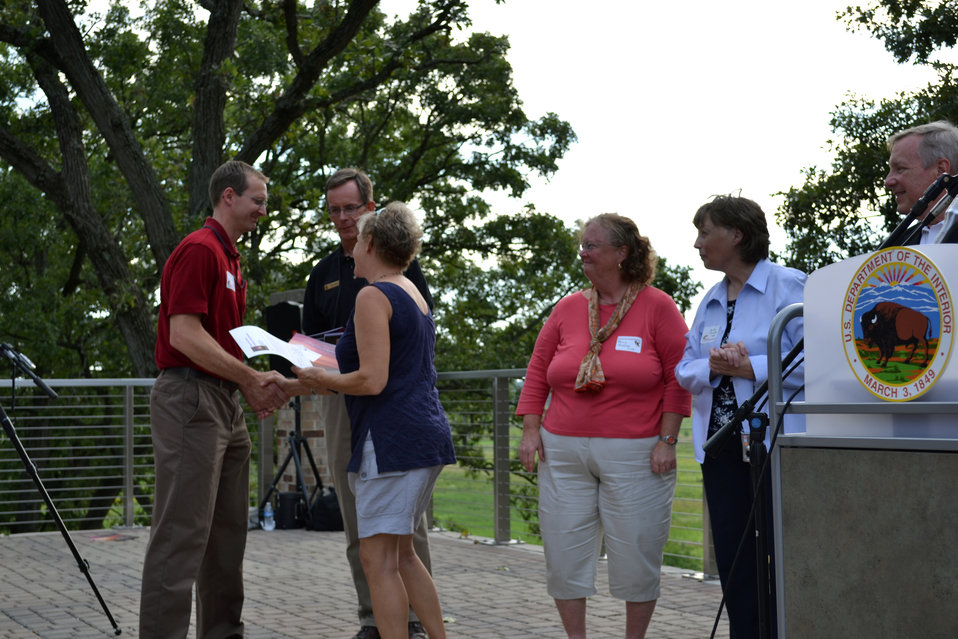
FOH Thank USFWS

Friends of Hackmatack gave special thanks and recognition to Matt Sprenger and Tom Larson of the U.S. Fish and Wildlife Service regional planning team.